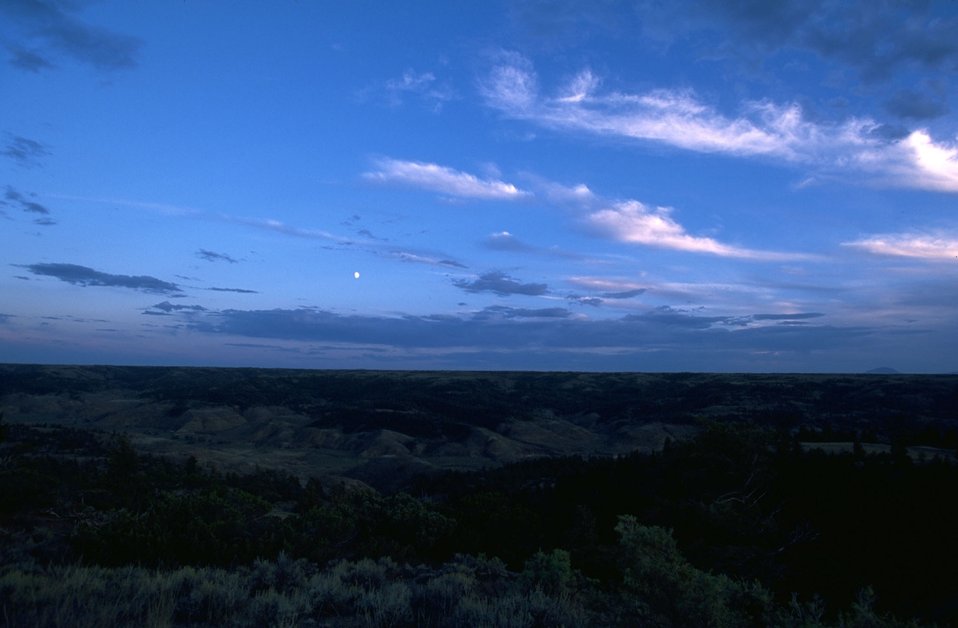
Clouds, sky over the Missouri Breaks